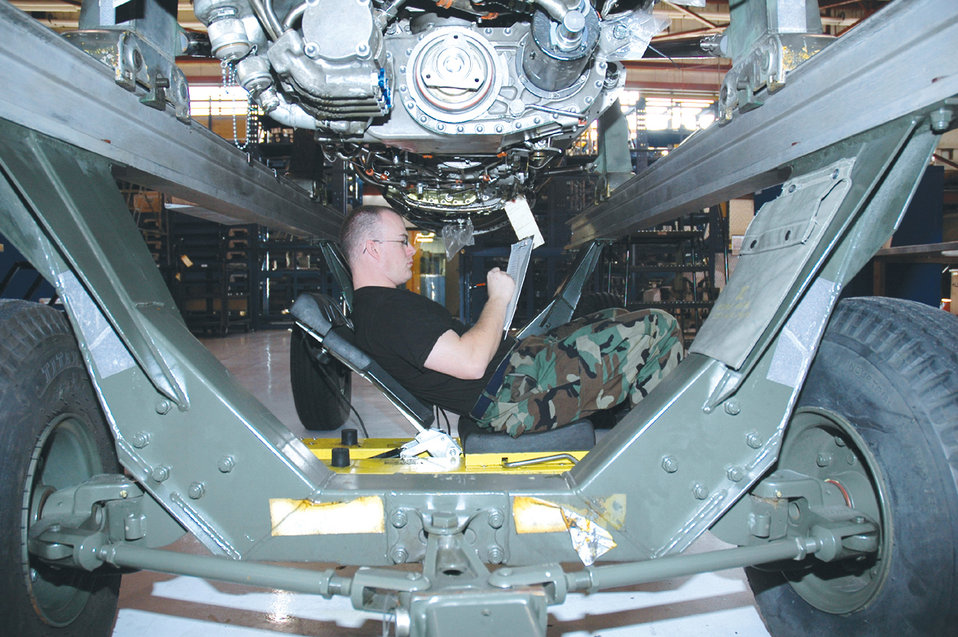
Fisher Distinguished Civilian Humanitarian award

PENTAGON (AFPN) -- Air Force Vice Chief of Staff Gen. John D.W. Corley presents Ernest O. Stewart with the Air Force's nomination for the Zachary and Elizabeth Fisher Distinguished Civilian Humanitarian Award during a ceremony here Jan. 23. Established in 1996, the award honors an individual or organization demonstrating exceptional patriotism and humanitarian concern for members of the U.S. armed forces or their families. Each service branch annually submits nominees. Mr. Stewart, the Air Force's 2005 nominee for the award, is an active civic leader for Cannon Air Force Base, N.M., and has supported the Air Force more than 50 years. The Fisher House Foundation annually supports more than 8,500 military families of unexpected illness, disease or injury.